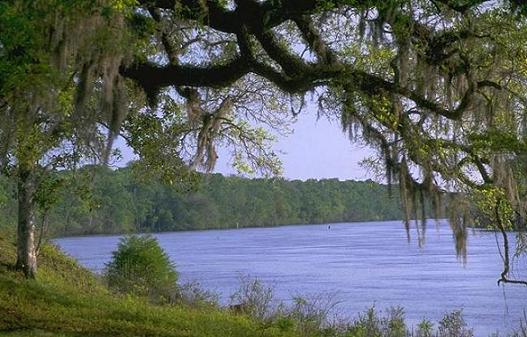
Apalachicola River near Ft. Gadsden2

View of the Apalachicola River from Fort Gadsden, FL located on the river’s east bank. The site is the only historic landmark listed on the National Register of Historic Places in the U.S. Department of Agriculture’s (USDA) Forest Service’s Southern Region.